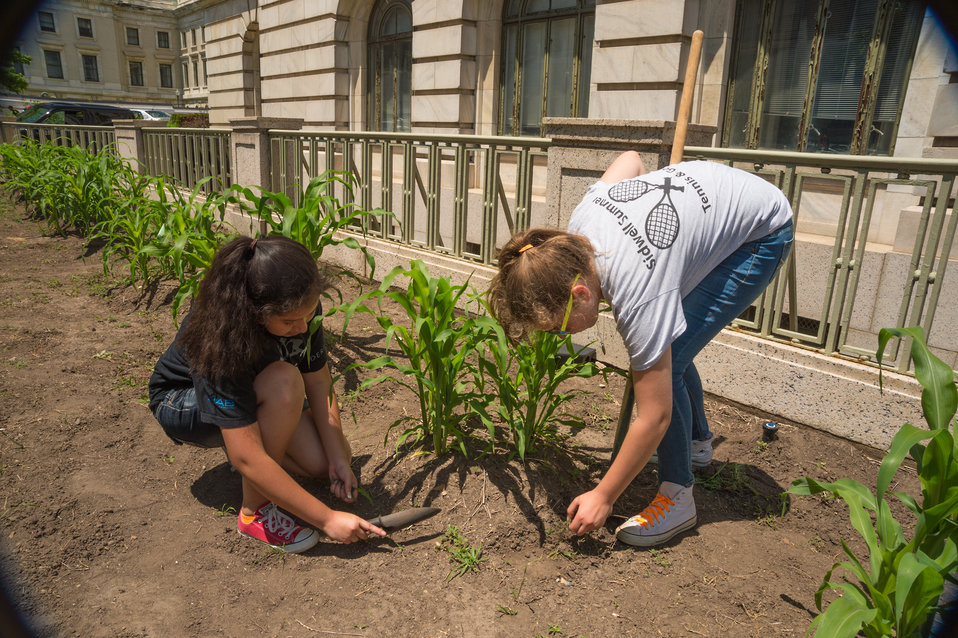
Jennifer Villeda and Daniella Kidder-Luciano seventh grade students from Alice Deal Middle School volunteered weeding and planting the Three Sisters Garden at the United States Department of Agriculture (USDA) People’s Garden, on Wed. Jun. 4, 2014 in Washington, DC. The garden is named the Three Sisters Garden for the three crops grown in the garden, corn, beans and squash. Corn the first sister is the tallest representing strength, beans the second sister climb and need the support of the first sister and provide nitrogen for the crops and squash the third sister protect others from sun and animals. The USDA’s Faith Based and Neighborhood Partnerships office sponsored the event.